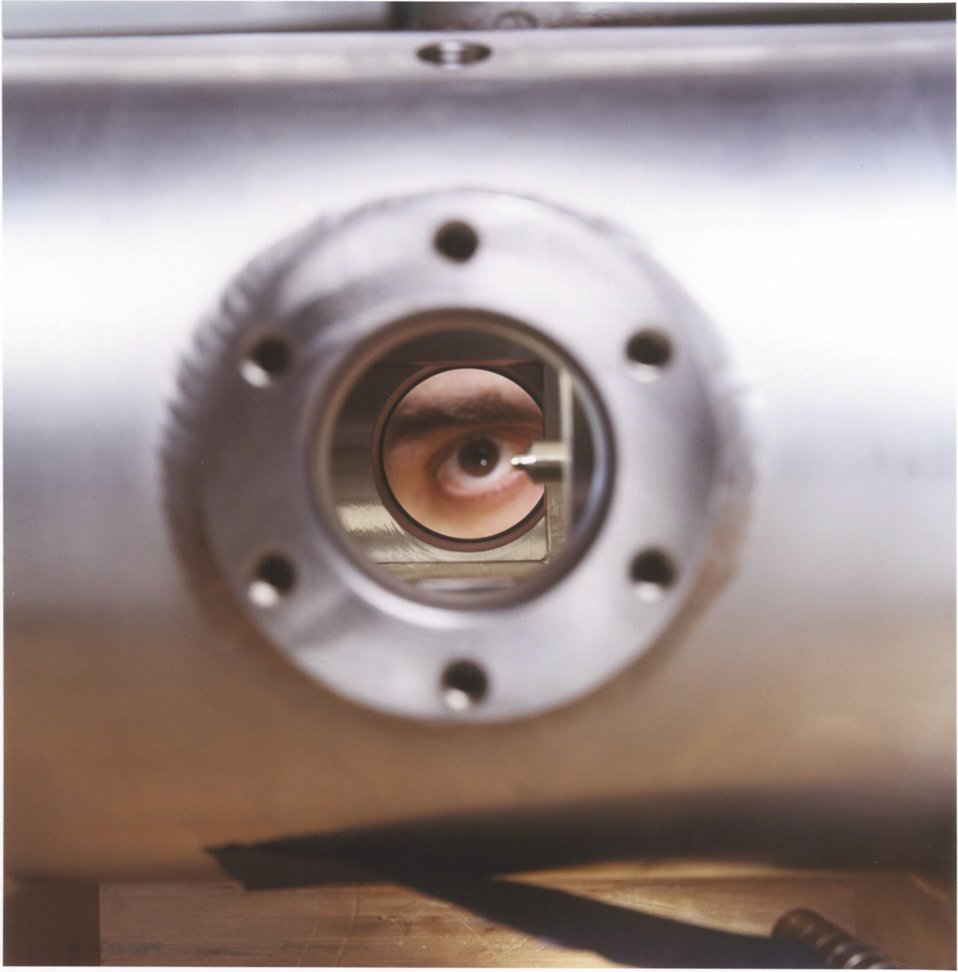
THE OPENING OF THIS FUEL SPRAY INJECTION CHAMBER PROVIDES OBSERVATION INTO THE INTERIOR OF DIESEL ENGINES DURING FUEL INJECTION.

ARGONNE SCIENTISTS ARE USING X-RAY BEAMS TO PENETRATE DIESEL FUEL INJECTOR SPRAYS TO IMPROVE COMBUSTION, TOWARD A CLEANER, MORE EFFICIENT ENGINE INJECTION SYSTEM. THE RESEARCH TEAM FROM THE EXPERIMENTAL FACILITIES AND ENERGY SYSTEMS DIVISIONS USES X-RAYS FROM THE ADVANCED PHOTON SOURCE (A FACILITY DEDICATED TO PRODUCING SYNCHROTRON X-RAY BEAMS FOR RESEARCH) TO STUDY THE FUEL INJECTION SYSTEM OF AN ENGINE AND HOW COMBUSTION WORKS.